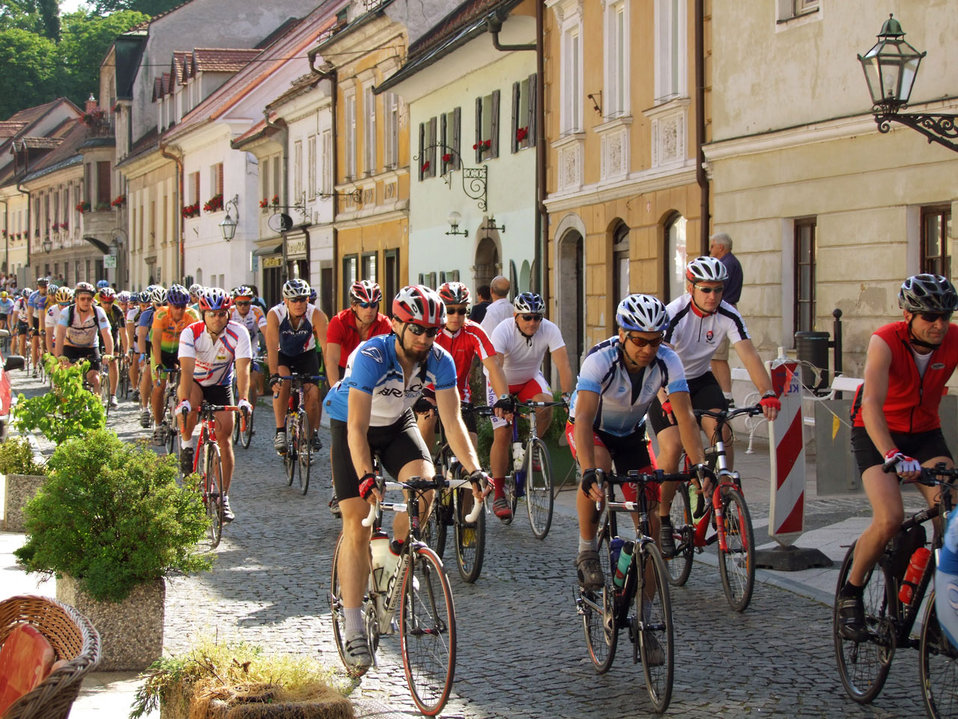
Bicycle marathon

Start of 2008 kamnik alps marathon.